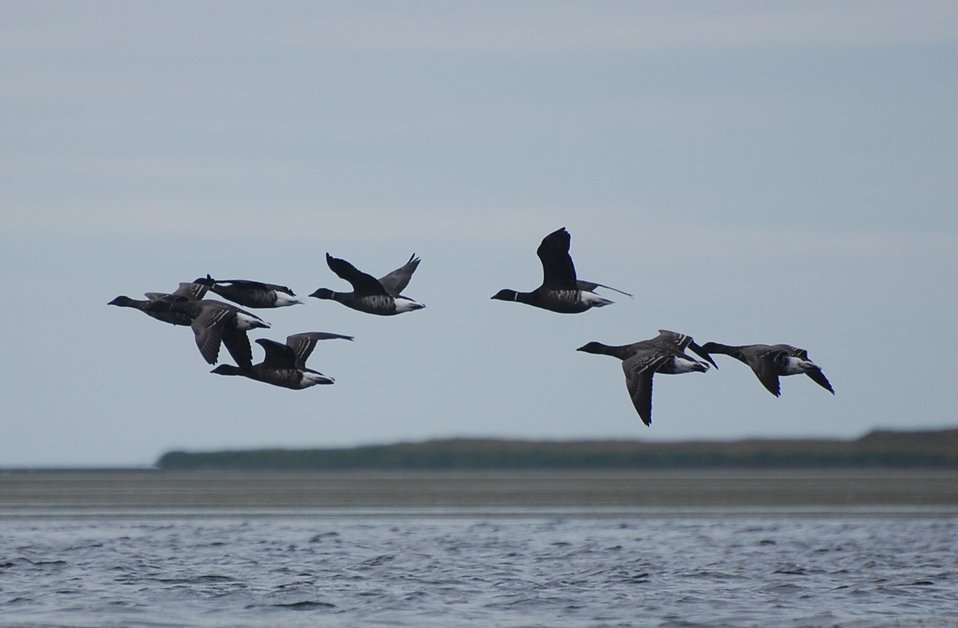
Brant at Izembek Lagoon, Izembek National Wildlife Refuge